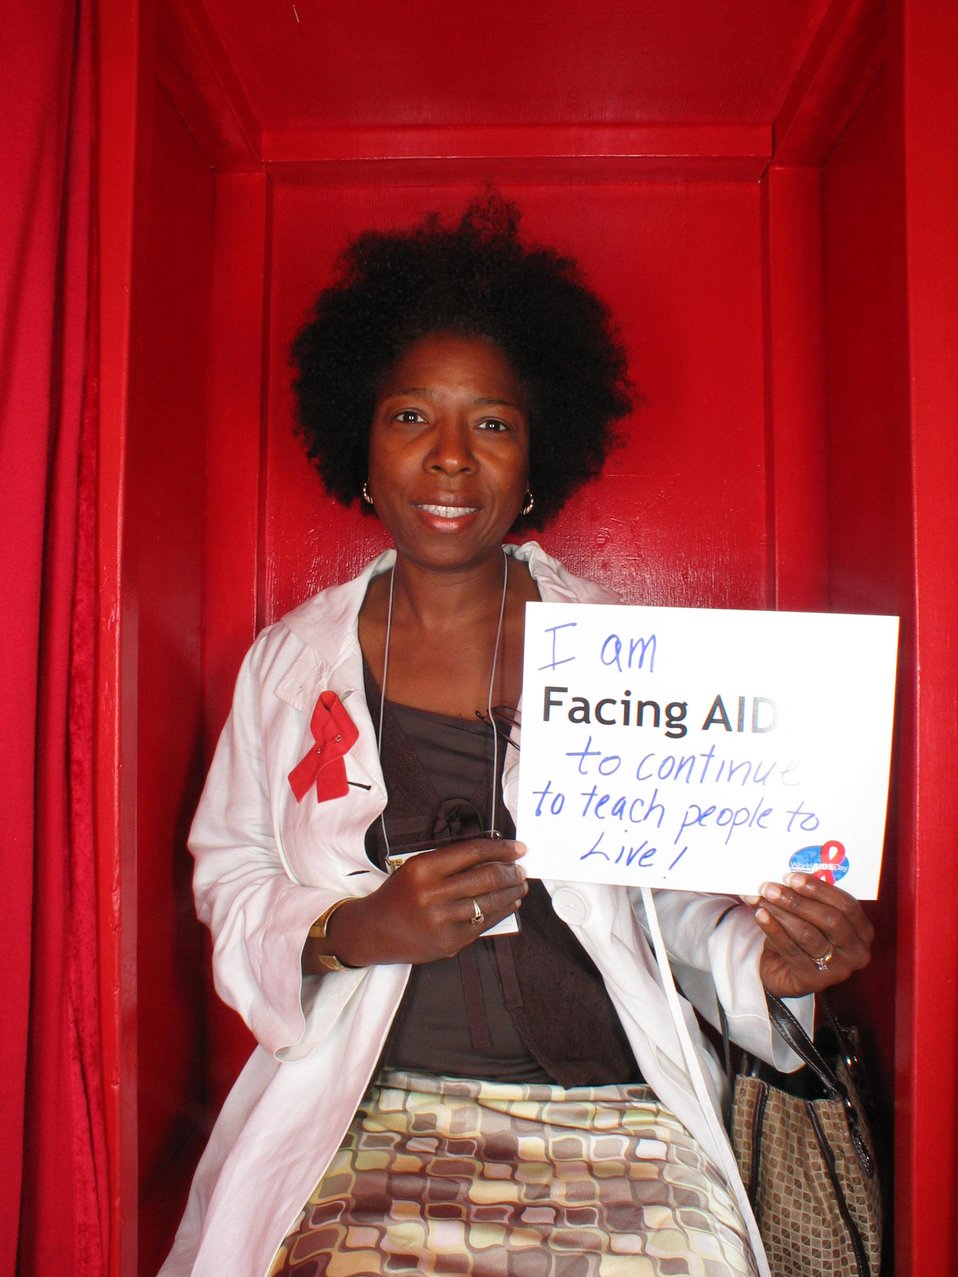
I am Facing AIDS to continue to teach people to live!